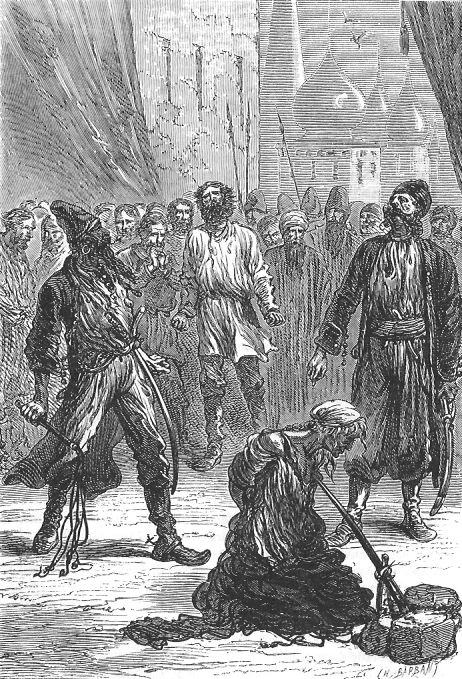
An illustration from the novel 'Michael Strogoff: The Courier of the Czar' by Jules Verne drawn by Jules Férat. Polski: Ilustracja powieści Juliusza Verne'a 'Michał Strogow, kurier carski' autorstwa Julesa Férata. Français : 'Michel Strogoff. Le courier du tzar', Jules Férat. Français : « Va ! » dit Ivan Ogareff.